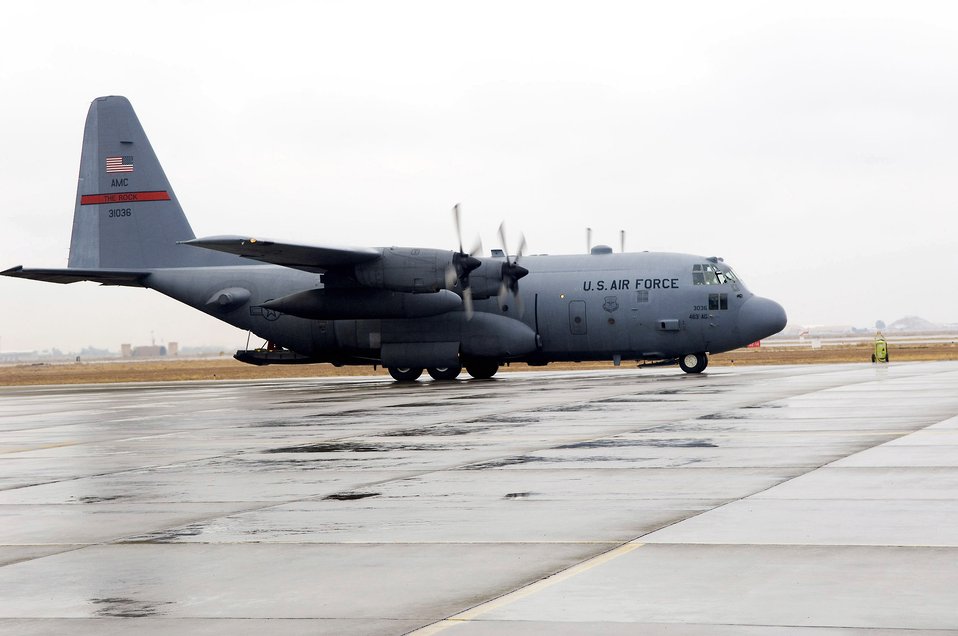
May 29 airpower summary: C-130s transport troops

A C-130 Hercules taxis on the runway after the crew picked up military members from a forward operating base in Iraq.